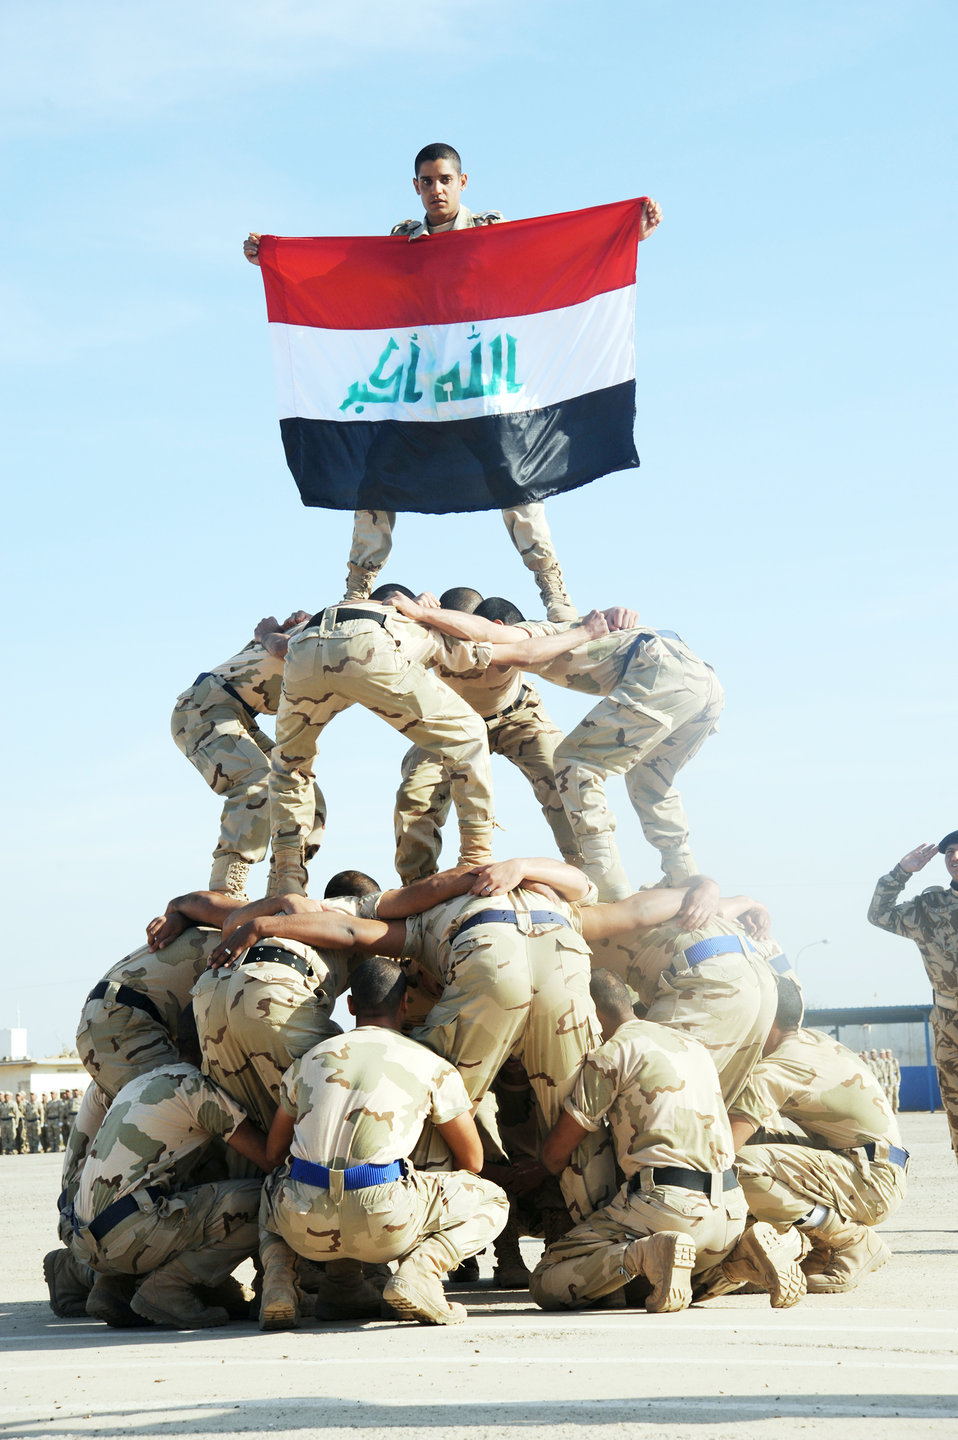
New recruits get a leg up

Iraqi air force recruits build a human pyramid during their graduation ceremony from the basic military training Top Off course at the Iraqi Air Force Training School Dec. 28, 2009, at Camp Taji, Iraq. The Top Off course teaches recruits about rank structure, leadership and what kind of benefits they will receive.